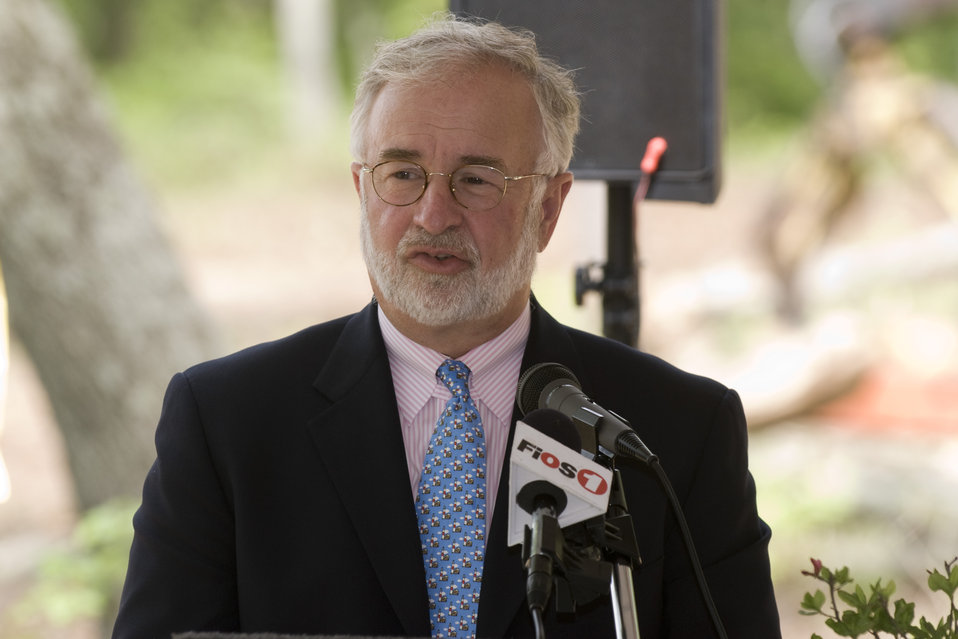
U.S. Congressman Tim Bishop